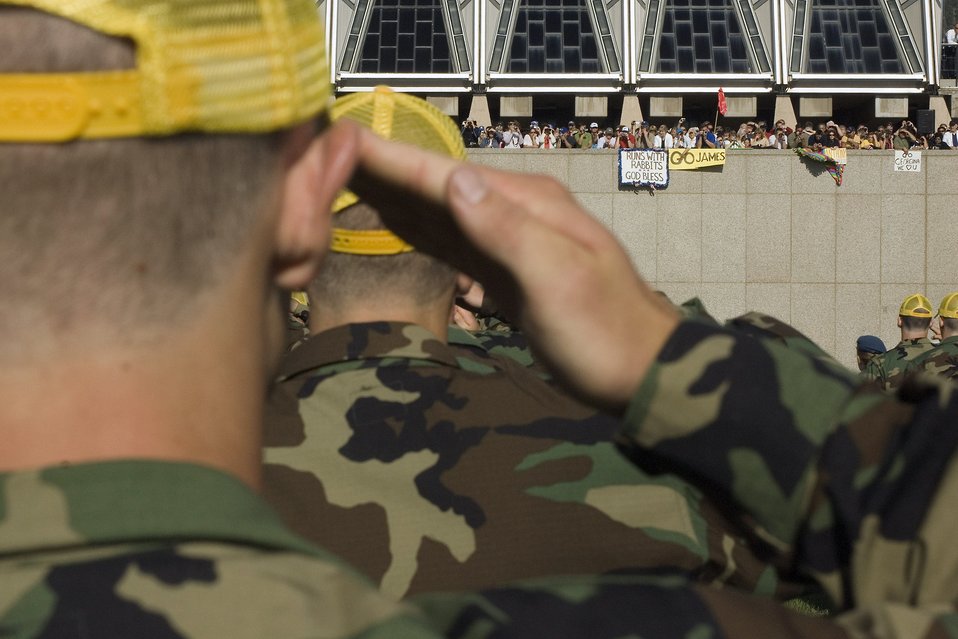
I, do solemnly swear ...

Basic cadets salute prior to being administered the oath during the swearing-in ceremony as friends and family cheer on their loved ones June 29 at the U.S. Air Force Academy in Colorado. This ceremony marks the beginning of the first half of basic cadet training, commonly known as